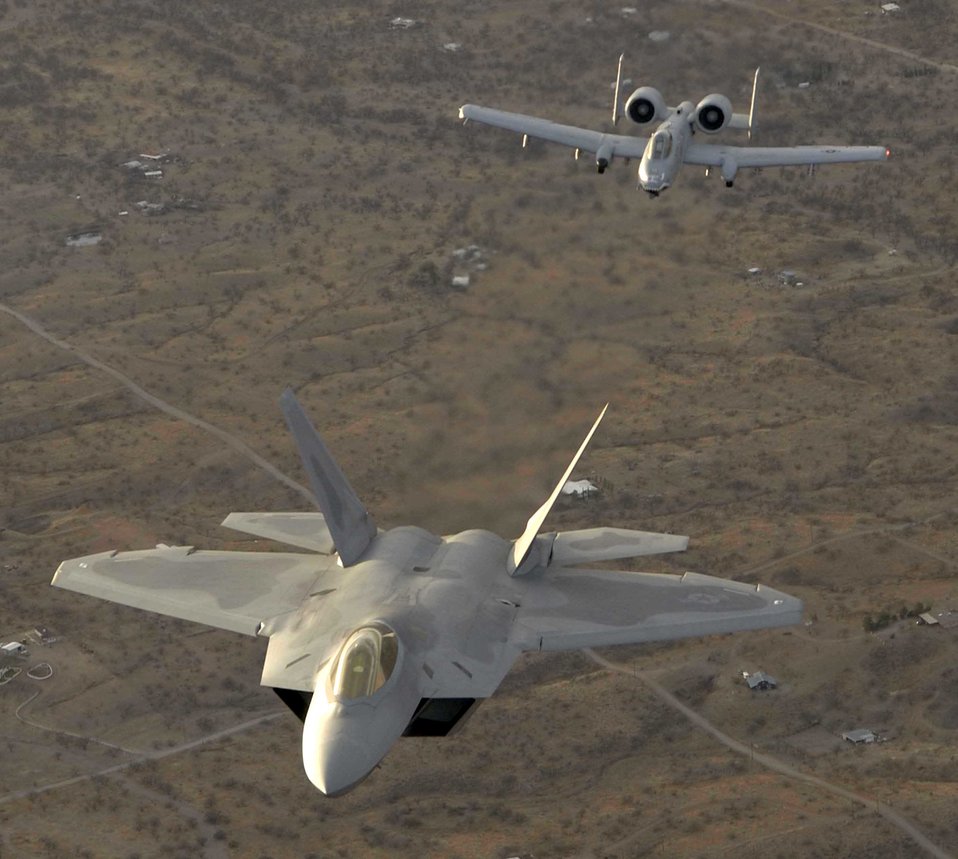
Heritage flight

An F-22A Raptor from Langley Air Force Base, Va., and an A-10 Thunderbolt II from Pope AFB, N.C., fly over Tucson, Ariz., Sunday, March 5, 2006, during the 2006 Heritage Conference. The conference combines different U.S. aircraft from more than 60 years of aviation history to ensure certification in performing air shows worldwide.